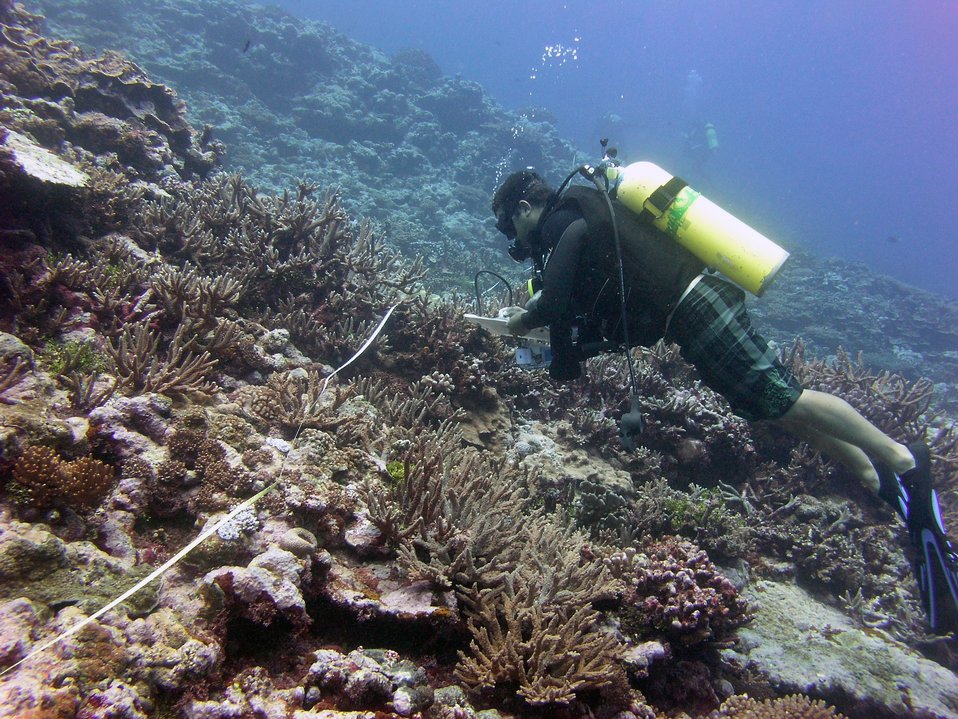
Scientific diver taking notes on reef transect